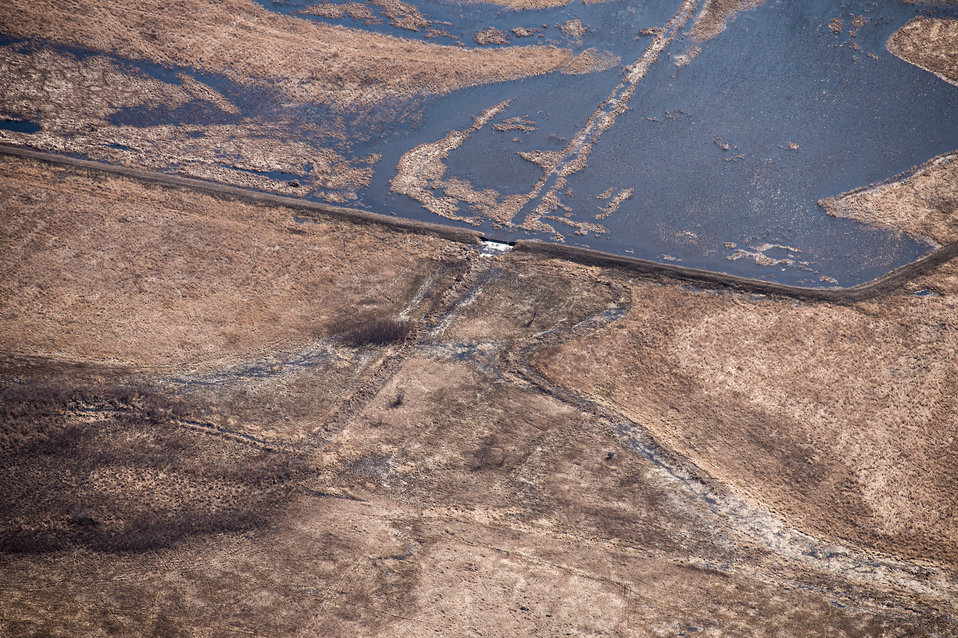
Ehlert North U.S. Department of Agriculture (USDA) Natural Resources Conservation Service (NRCS) Wetland Reserve Program (WRP) in Wilkin County, MN, on Tuesday, April 30, 2013. For information about this and other programs from the USDA Red River Basin Initiative (RRBI) please see www.mn.nrcs.usda.gov/news/features13/RRBI.html.